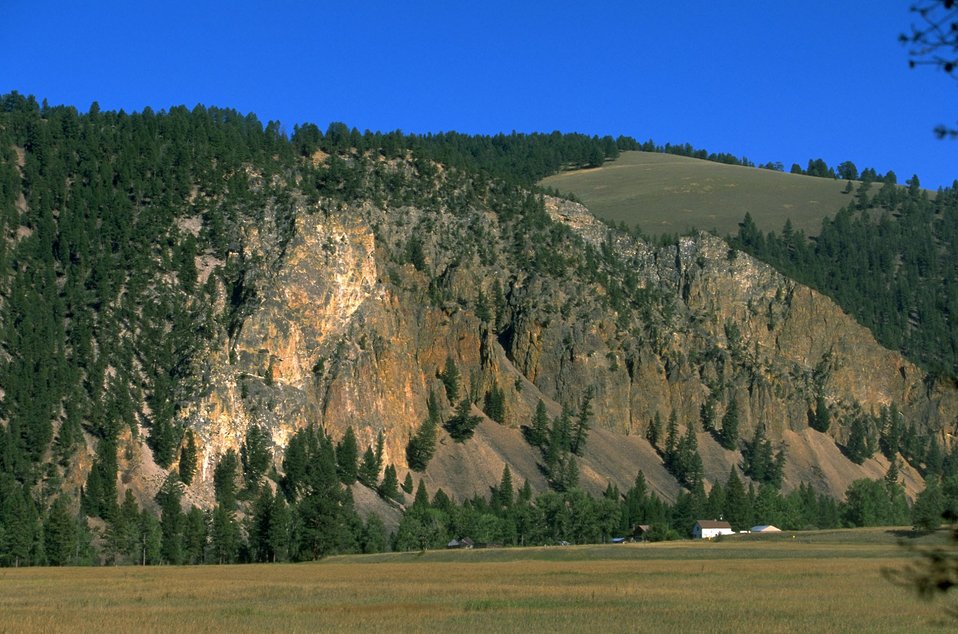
Squaw Rock ACEC (area of critical environmental concern)